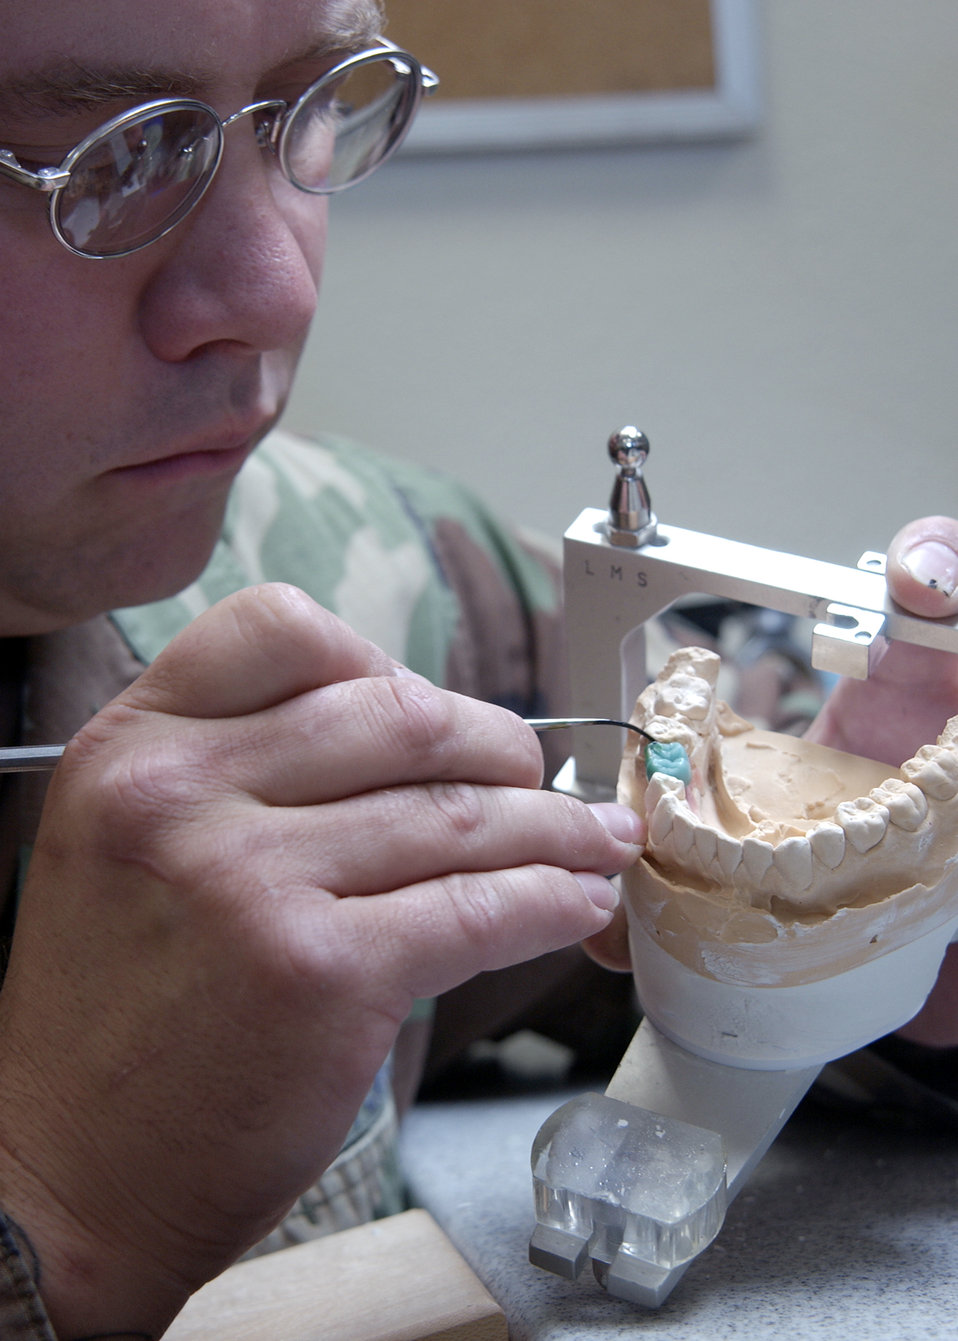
Armed to the teeth

Staff Sgt. Kasey Varvel creates a porcelain dental crown for a patient at Davis-Monthan Air Force Base, Ariz., on Aug. 10. The 355th Dental Squadron provides services for more than 7,000 active-duty Airmen at Davis-Monthan so that they may remain mission ready.